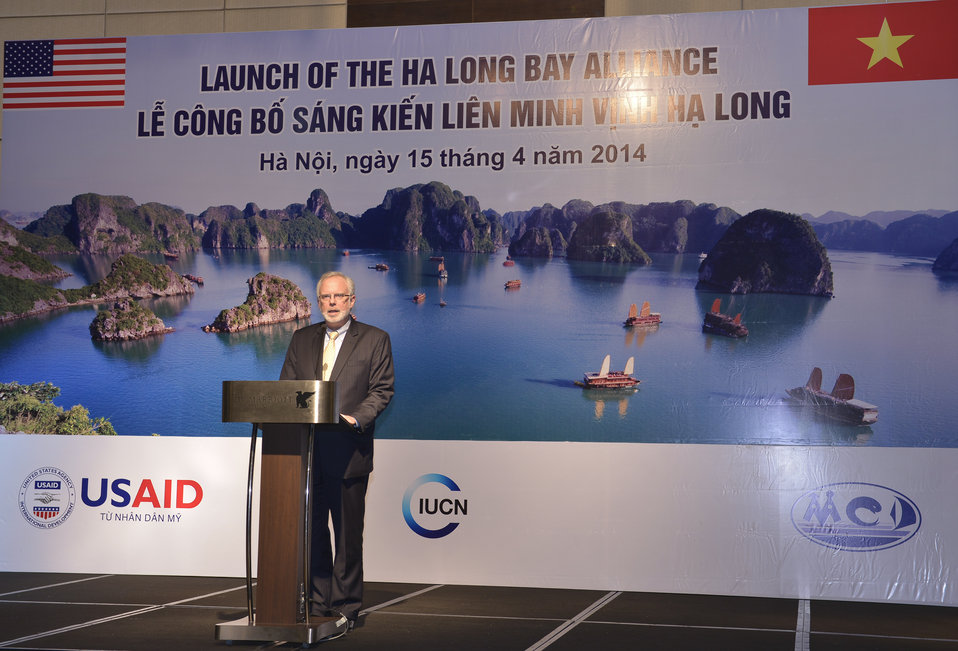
U.S. Ambassador David Shear speaks at the launching ceremony.

Hanoi, April 15, 2014.